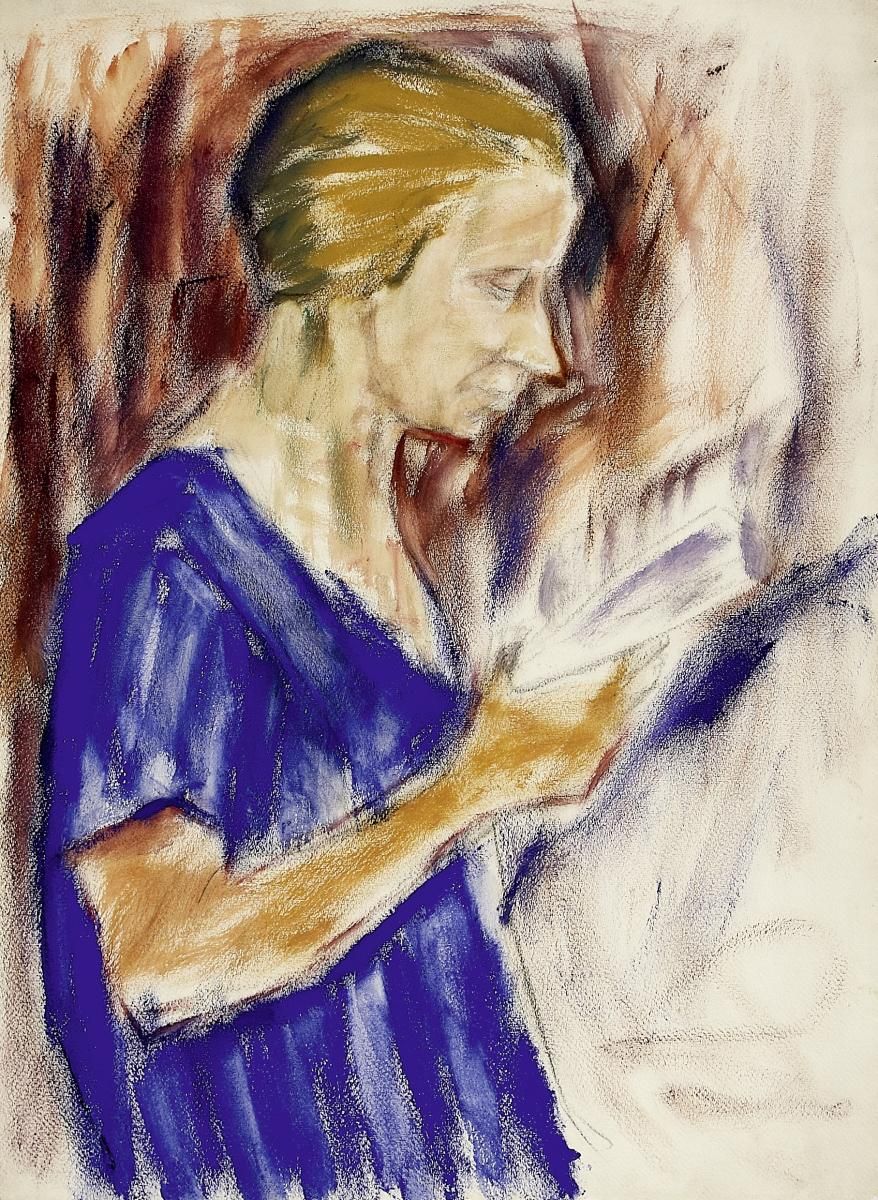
Helene Rohlfs, lesend. Tempera und Farbkreide auf JWZANDERS 1920. 78 x 57cm.